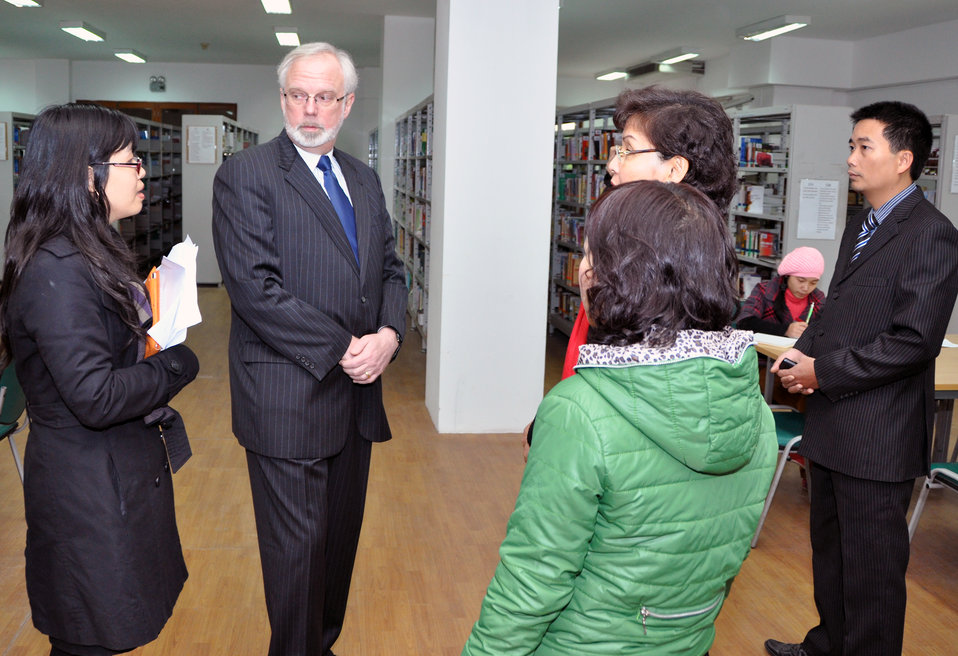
U.S. Ambassador David Shear visits the National Library

Safe Medicine Exhibition